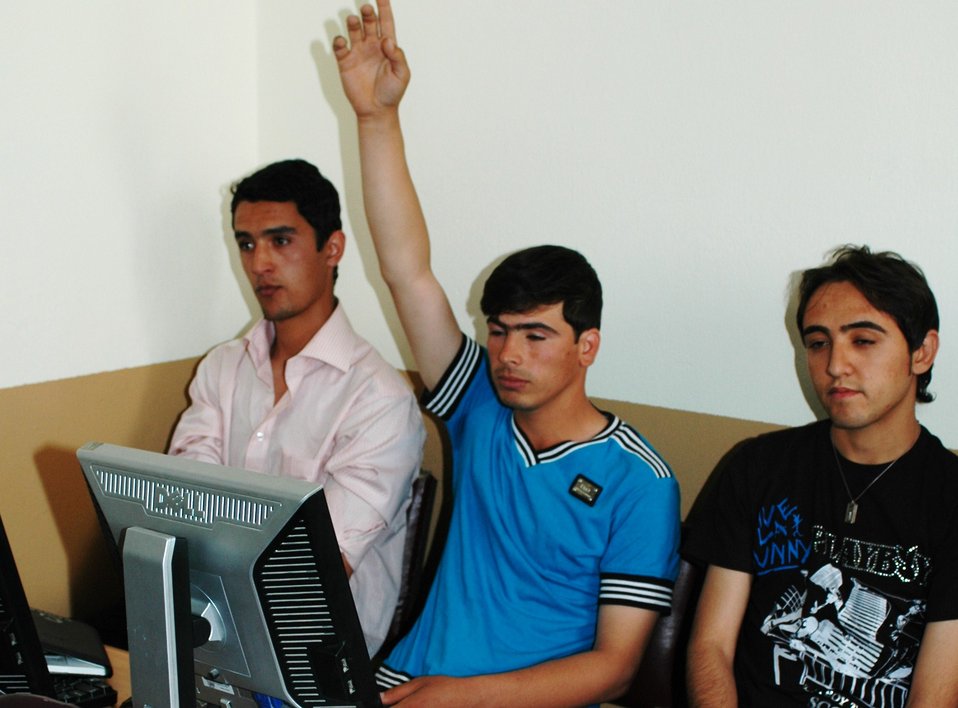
Dr Shah Visits Votech in Kabul